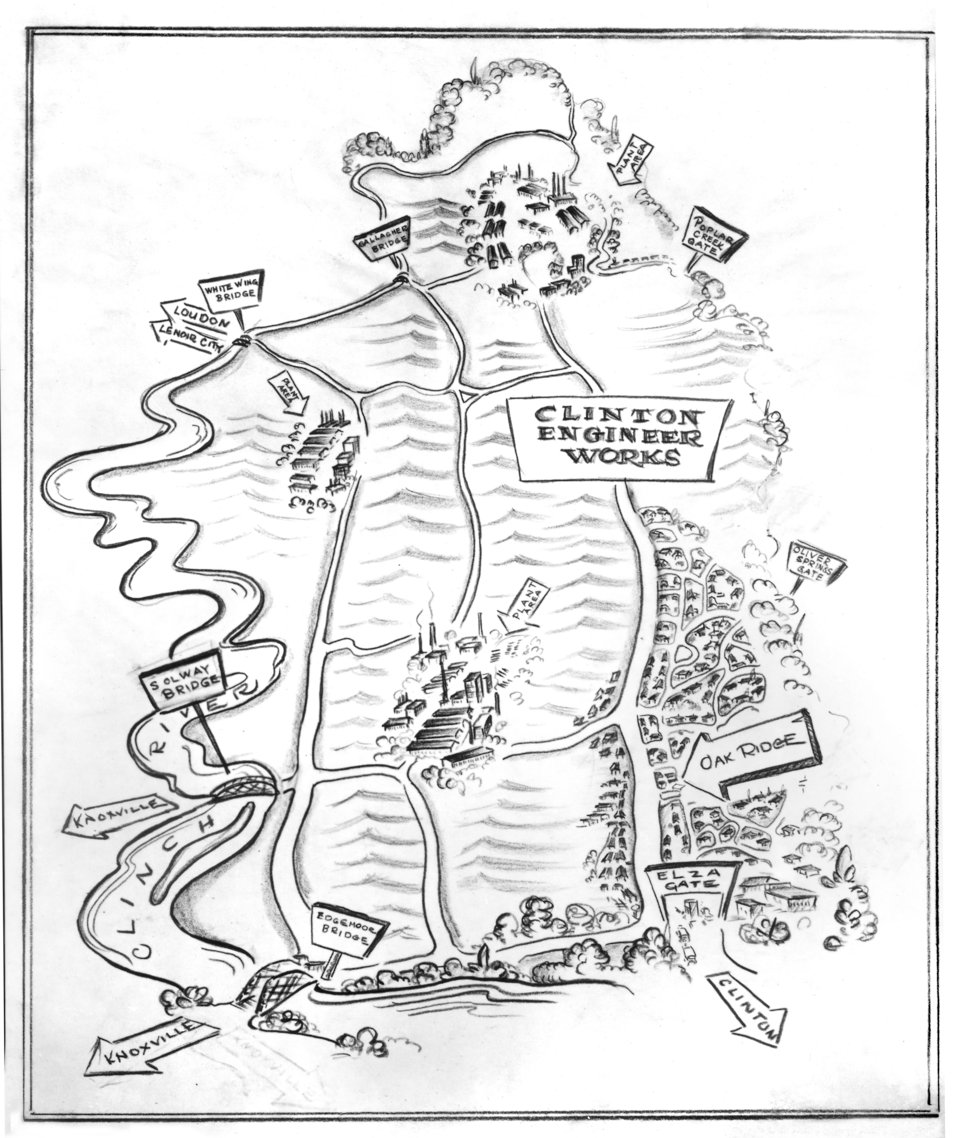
Artist drawing of Oak Ridge Reservation

MED617 DOE drawing
Artist drawing of Oak Ridge Reservation 1945